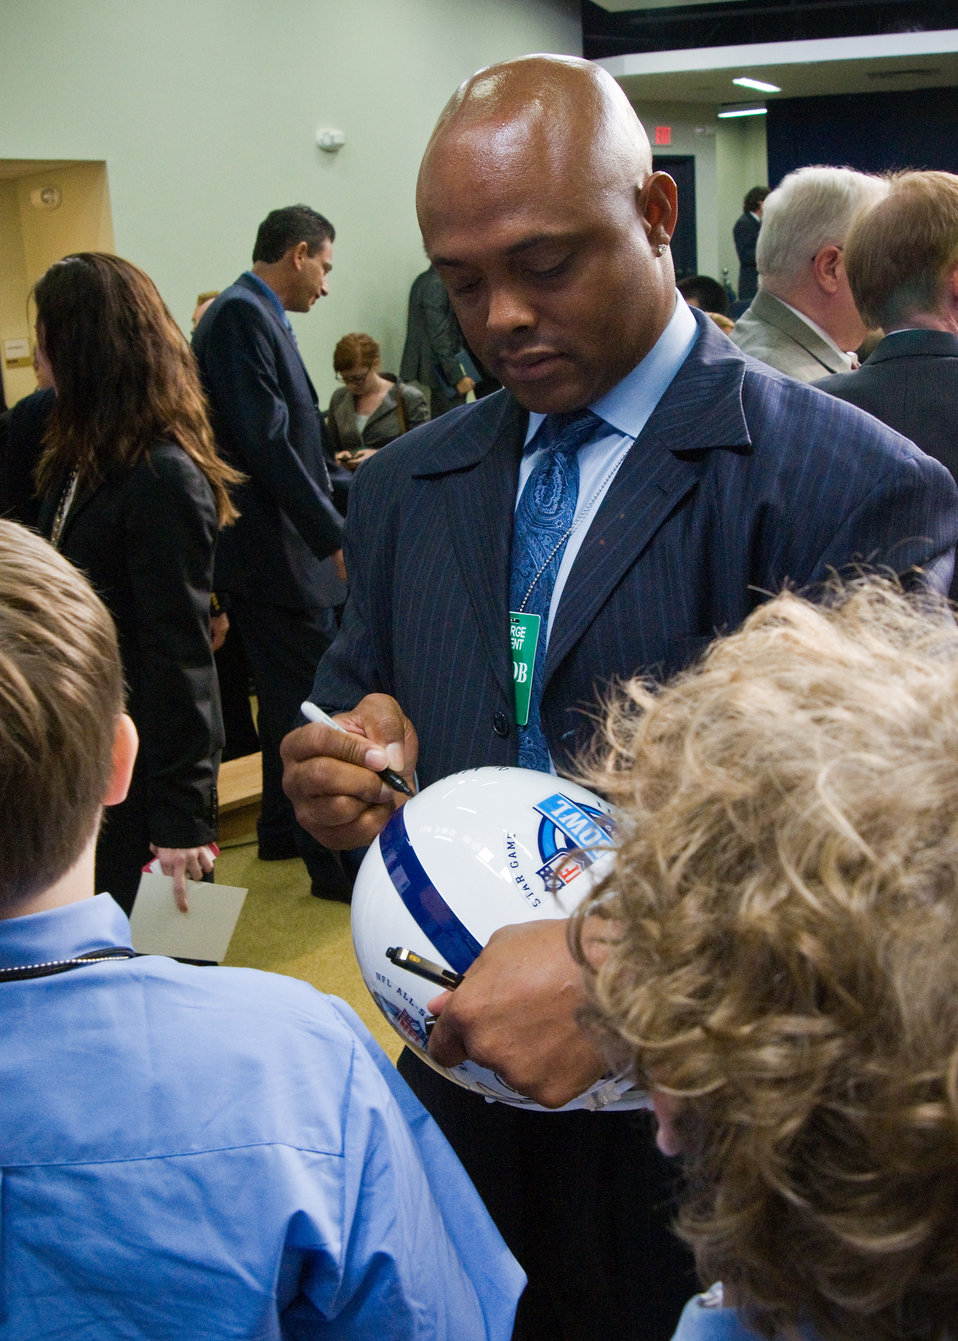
Former Washington Redskins Running Back Brian Mitchell signs a replica Pro Bowl helmet for Frederick Blackwell after Blackwell beat Mitchell playing the computer game, “Smash Your Food.” “Smash Your Food” is the Third Place winning app designed by Frederic De Wulf in the The Apps for Healthy Kids games competition. The Apps for Healthy Kids competition is part of First Lady Michelle Obama’s Let’s Move campaign to end childhood obesity within a generation. The competition challenges software developers, game designers, students and other innovators to develop fun and engaging software tools and games to urge children, especially “tweens” (children ages 9-12) – directly or through their parents – to eat better and be more physically active. The applications are software tools or games for the web, personal computer, mobile handheld device, console or any software platform available to the public. The winners were honored at the White House, Wednesday, September 29, 2010 . USDA Photo 10di1506-159 by Bob Nichols.